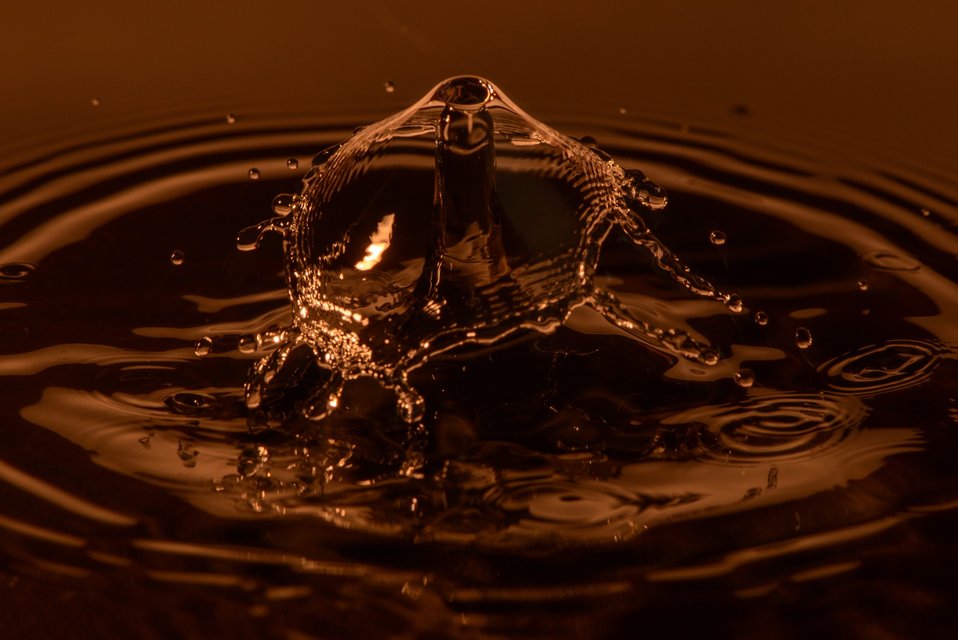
Orange mushroom resulting from the impact of two drops of water.